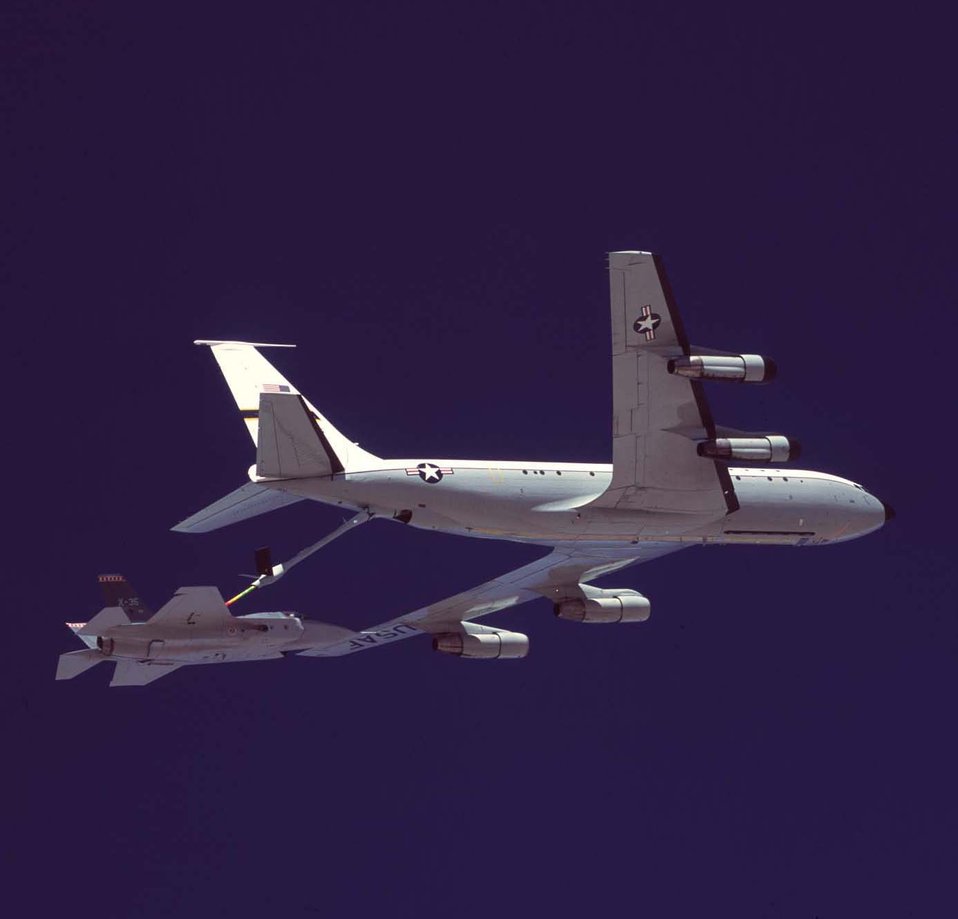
Refueling the X-35

EDWARDS AIR FORCE BASE, Calif. -- Lt. Col. Paul Smith holds the X-35A Joint Strike Fighter steady in behind a 418th Flight Test Squadron KC-135 tanker during the X-35A's first refueling mission.